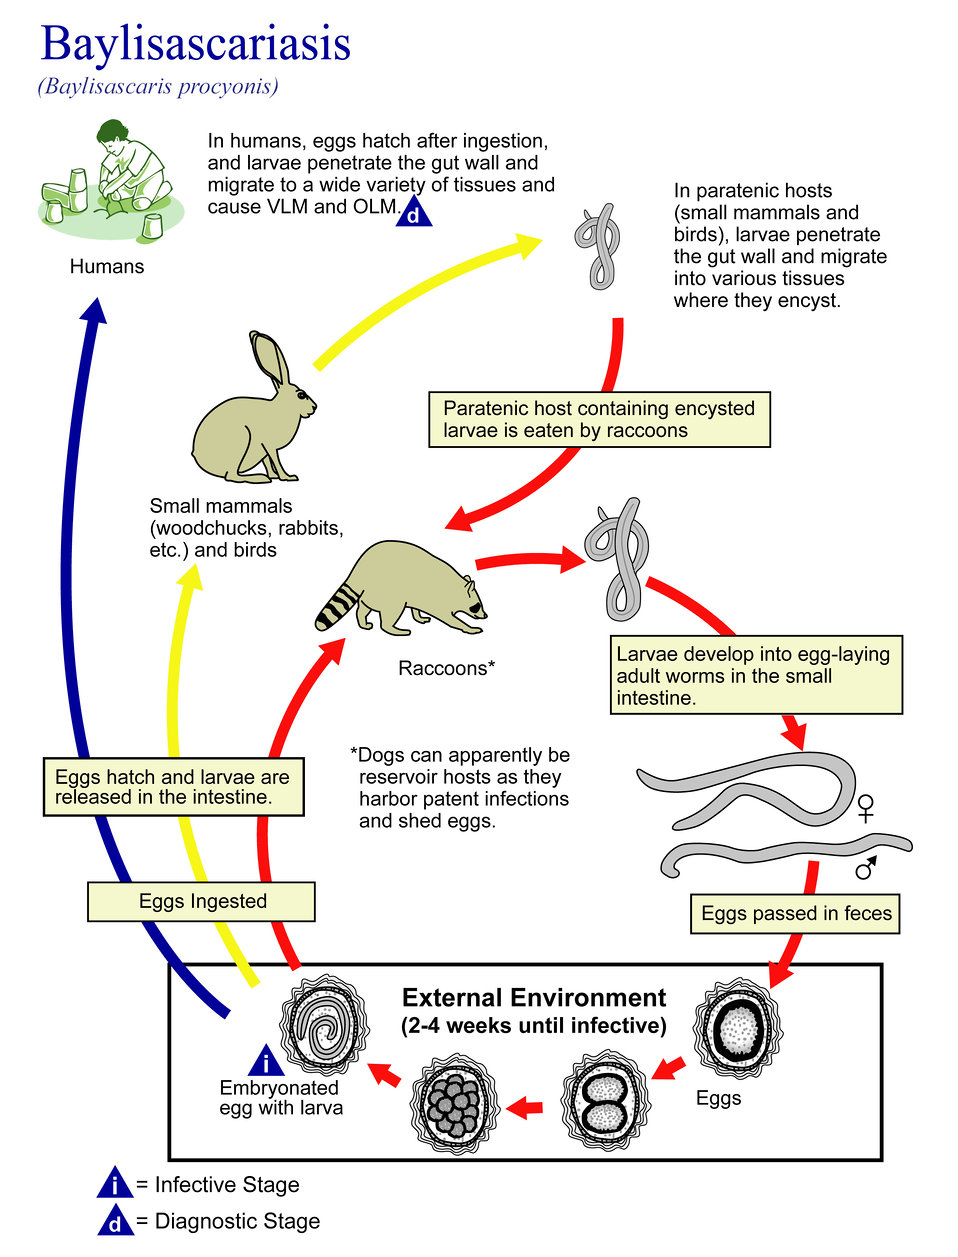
This illustration depicts the life cycle of Baylisascaris procyonis, the causal agent of Baylisascariasis.